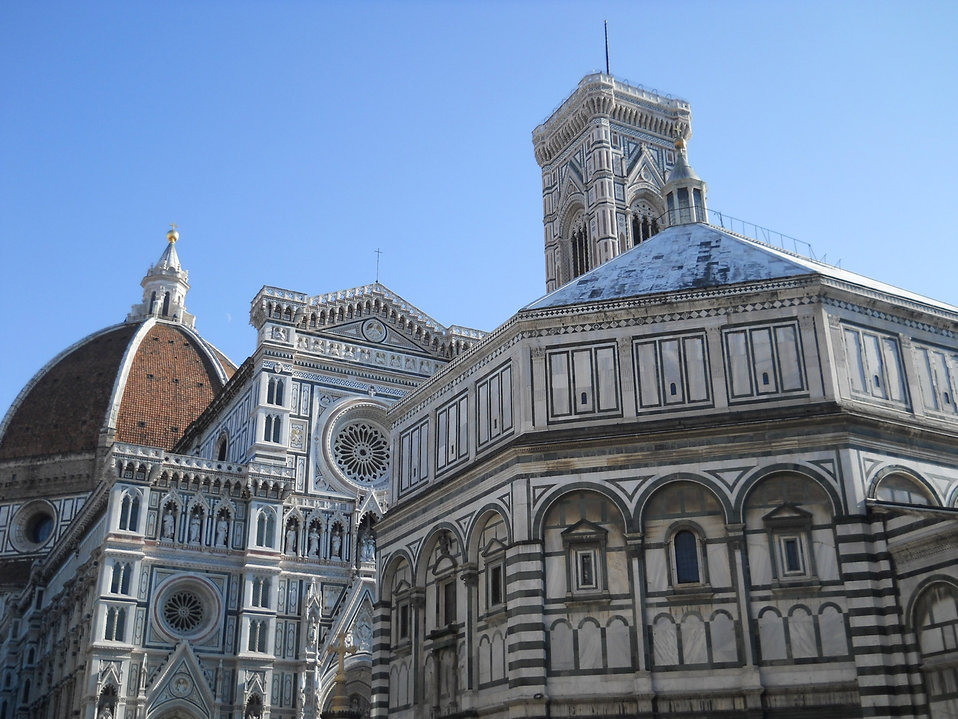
Cathedral and baptistery florence

View over the rooftops of the cathedral and baptistery of florence.